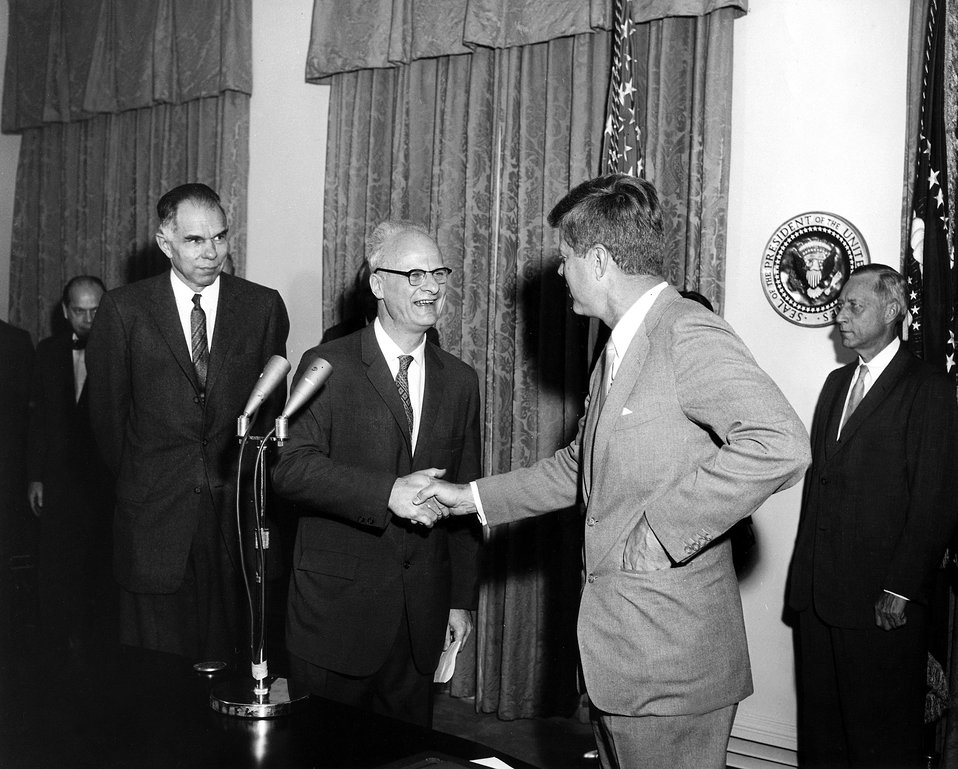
Hans Bethe and President John F. Kennedy.